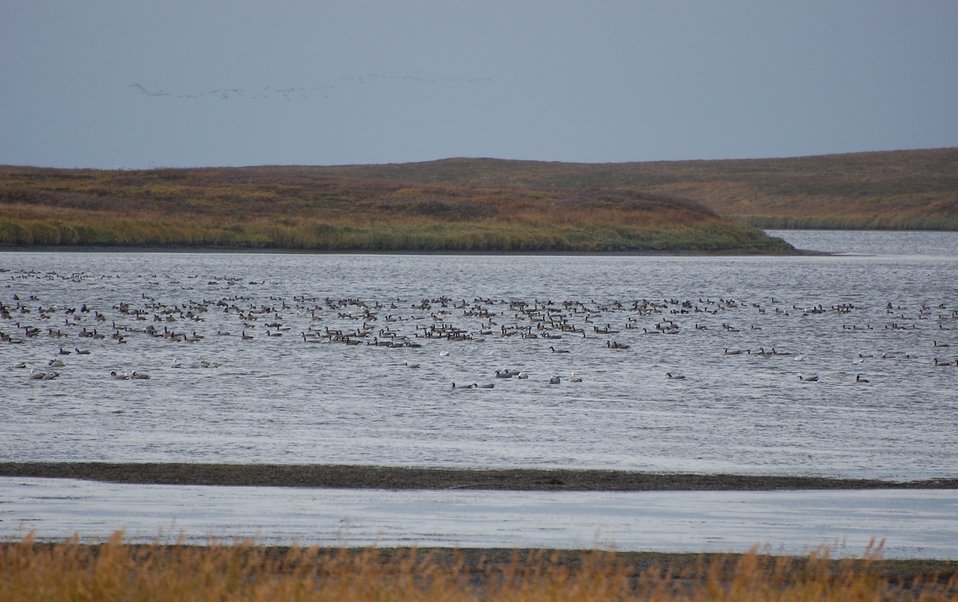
Cackling and Emperor Geese

Izembek National Wildlife Refuge